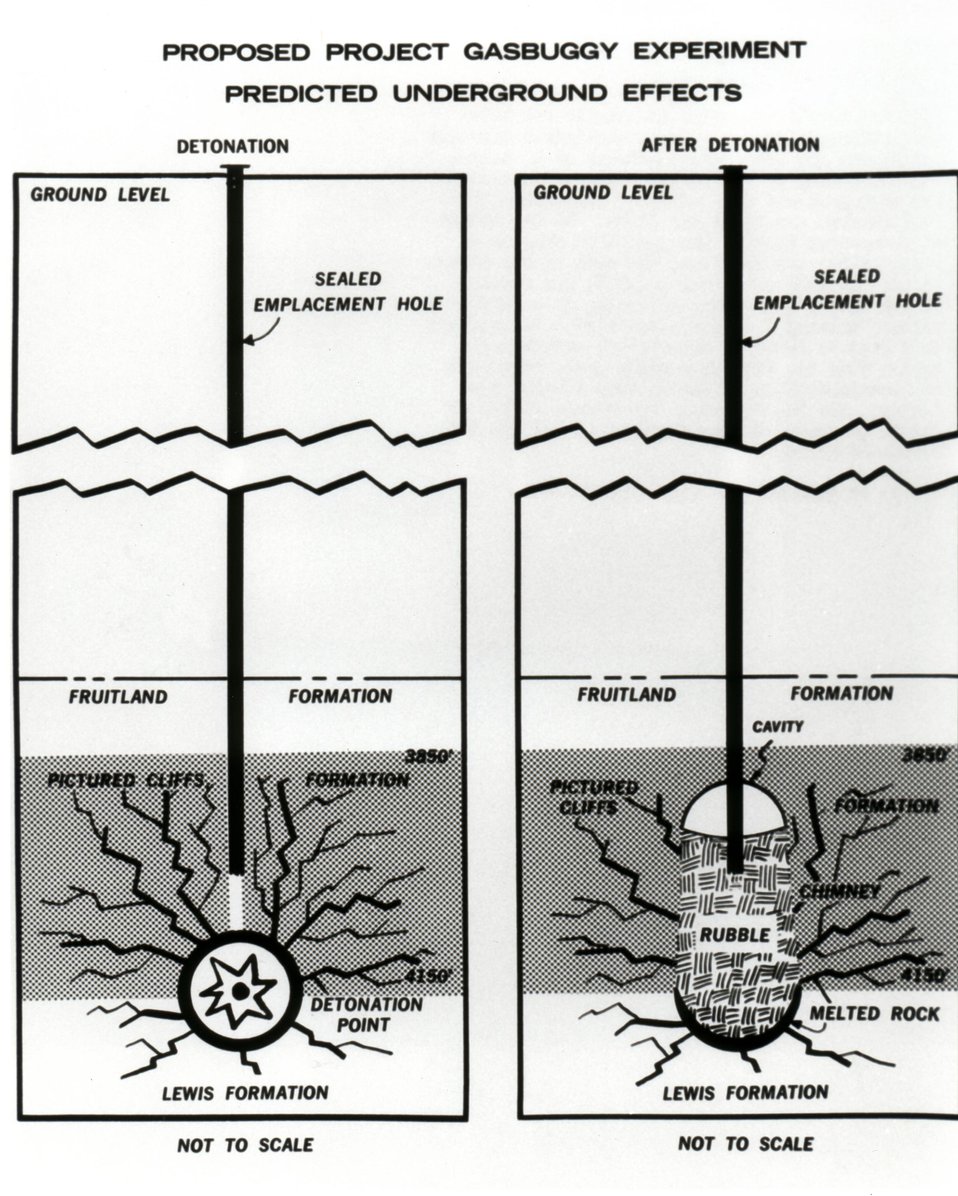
Project Gasbuggy Predicted Underground Effects...These simplified drawings illustrate the anticipated effects of a nuclear explosion deep in the earth. Circa 1965.